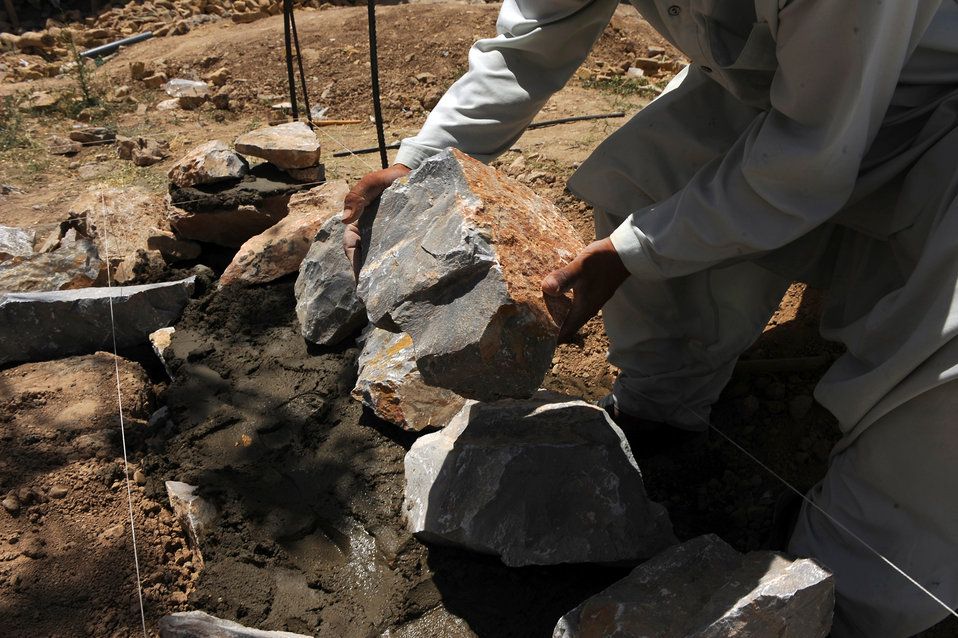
Joint team construction projects follow Afghan priorities

Afghan workers set the foundation of an indoor bathroom for the S.Malakhi Provincial Hospital May 27, 2010, in Qalat City, Afghanistan.